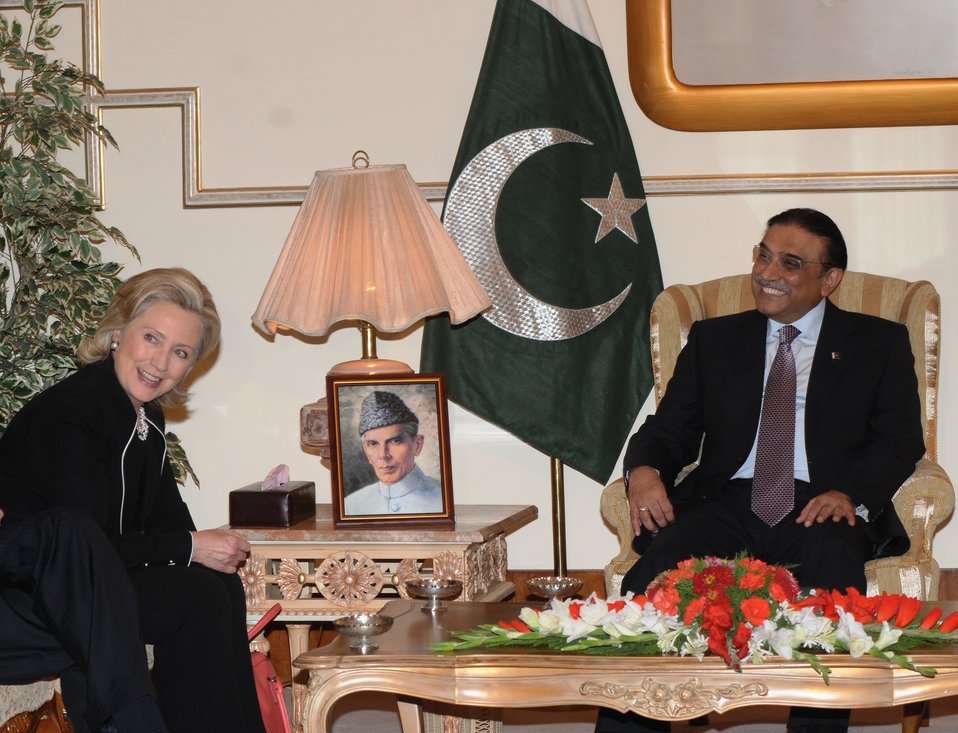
Pakistani President Asif Ali Zardari and Secretary Clinton Share a Light Moment

Pakistani President Asif Ali Zardai shares a light moment with U.S. Secretary of State Hillary Rodham Clinton at the Aiwan-e-Sadr in Islamabad, Pakistan, on July 18, 2010.